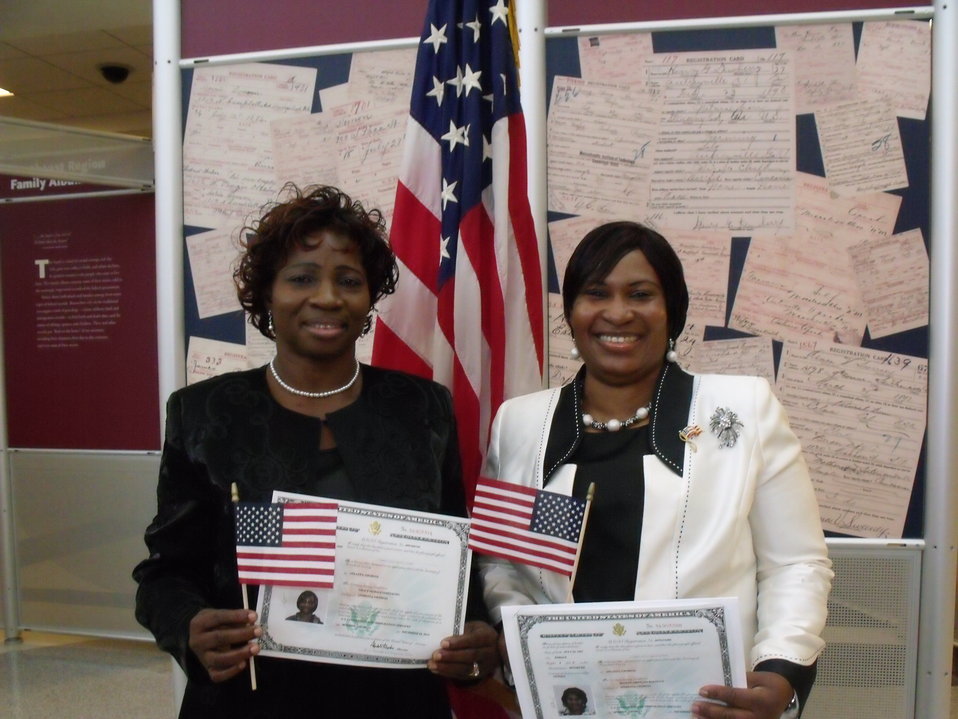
New Citizens